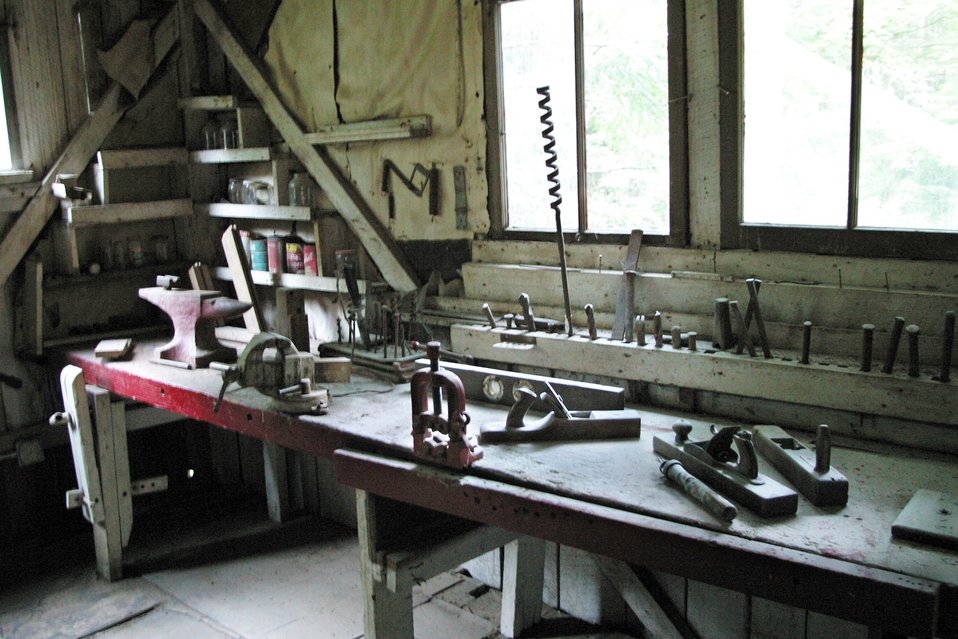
An interior view of the Tabernacle at the Rogue River Ranch.